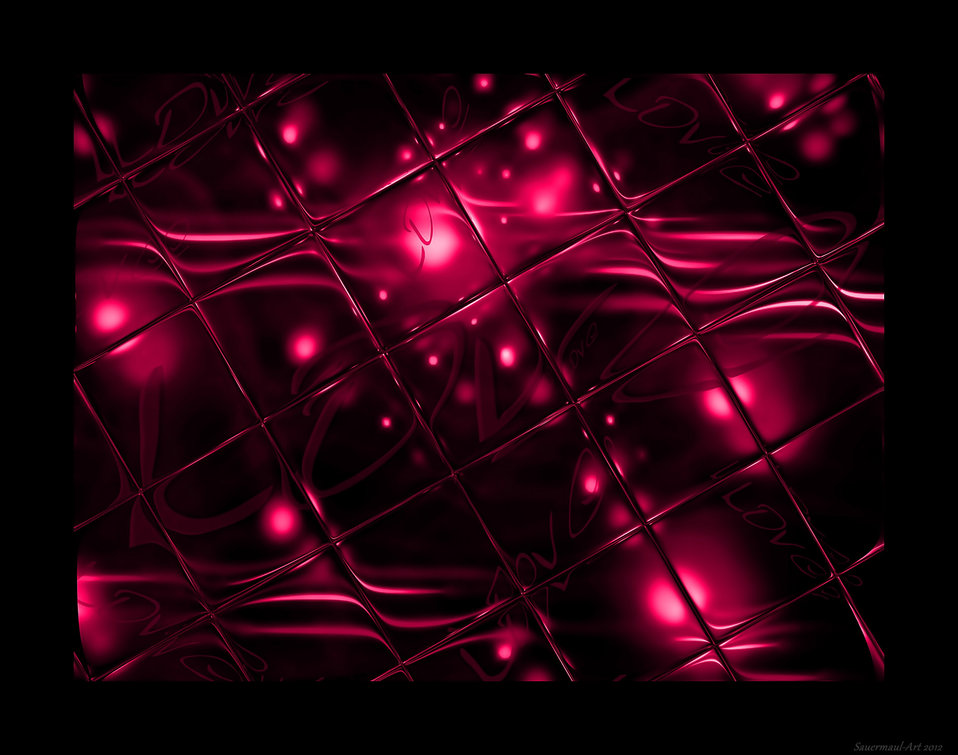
Picture of love in magenta

Declaration of love.